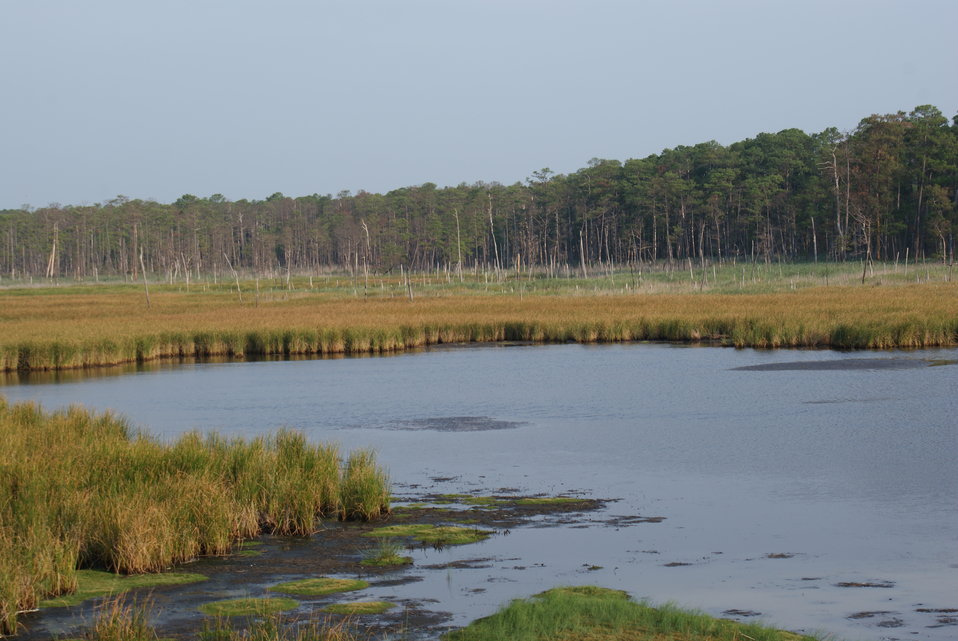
Blackwater National Wildlife Refuge

Tree die-off caused by by sea-level rise and subsidence. Photographed from the observation platform along the wildlife drive.